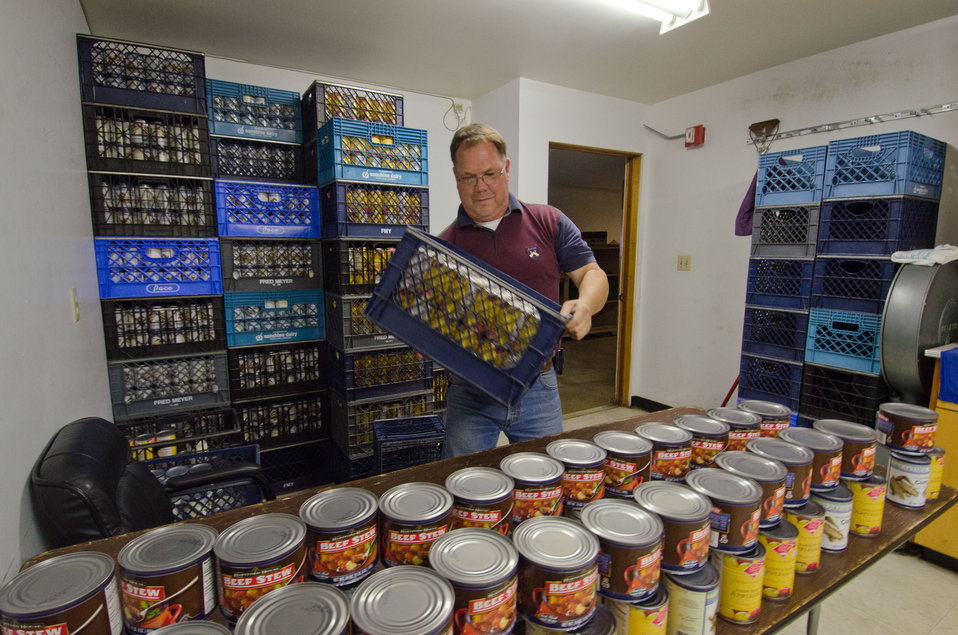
Tukwila Pantry Executive Director Joe Tice stocks the tables with canned goods; at the food bank he created, in Tukwila. WA, on Thursday, October 20, 2011. The pantry provides monthly food bank services to individuals and families in cities of Tukwila, SeaTac, Burien and the Boulevard Park community. Congregate meal service is held each Tuesday at the Riverton Park United Methodist Church. The church provides some funds, several large rooms, and outdoor operating space for the pantry’s food distribution, shipping container storage units, trailer, tents, shelters and refrigeration truck. The pantry's weekly Tuesday’s Table provides 150 hot meals to seniors, low-income families, homeless individuals and those in transition. Additionally, emergency referral services are provided to assist individuals connecting with agencies that can address their needs. Joe Tice grew up in Tukwila and feels compelled to give back to economically challenged community of 25,000 families in 3,000 households. “Since the pantry’s founding in 2000, census figures show poverty has risen 300%,” said Joe Tice. “85-95% of elementary school children are enrolled in SNAP (U.S. Department of Agriculture Supplemental Nutrition Assistance Program).” At the pantry’s height, it delivered 3.8 million pounds of food (2009), but with the economic downturn Tice projects 2011 deliveries to total 2.6 million pounds. Tice considers Tukwila Pantry as one of the smaller distribution points in the greater Seattle area. Some canned and dry goods are provided by
The Emergency Food Assistance Program (TEFAP) a Federal program that helps supplement the diets of low-income needy persons, including elderly people, by providing them with emergency food and nutrition assistance. A significant amount of the pantry’s food comes through Northwest Harvest, Washington's only nonprofit statewide food bank distributor; and Food Lifeline, the largest nonprofit food distributor in the state who solicit, receive, and distribute over 24 million meals of food to nearly 700,000 people through our network of 300 food banks (such as Tukwila Pantry), shelters and meal programs.